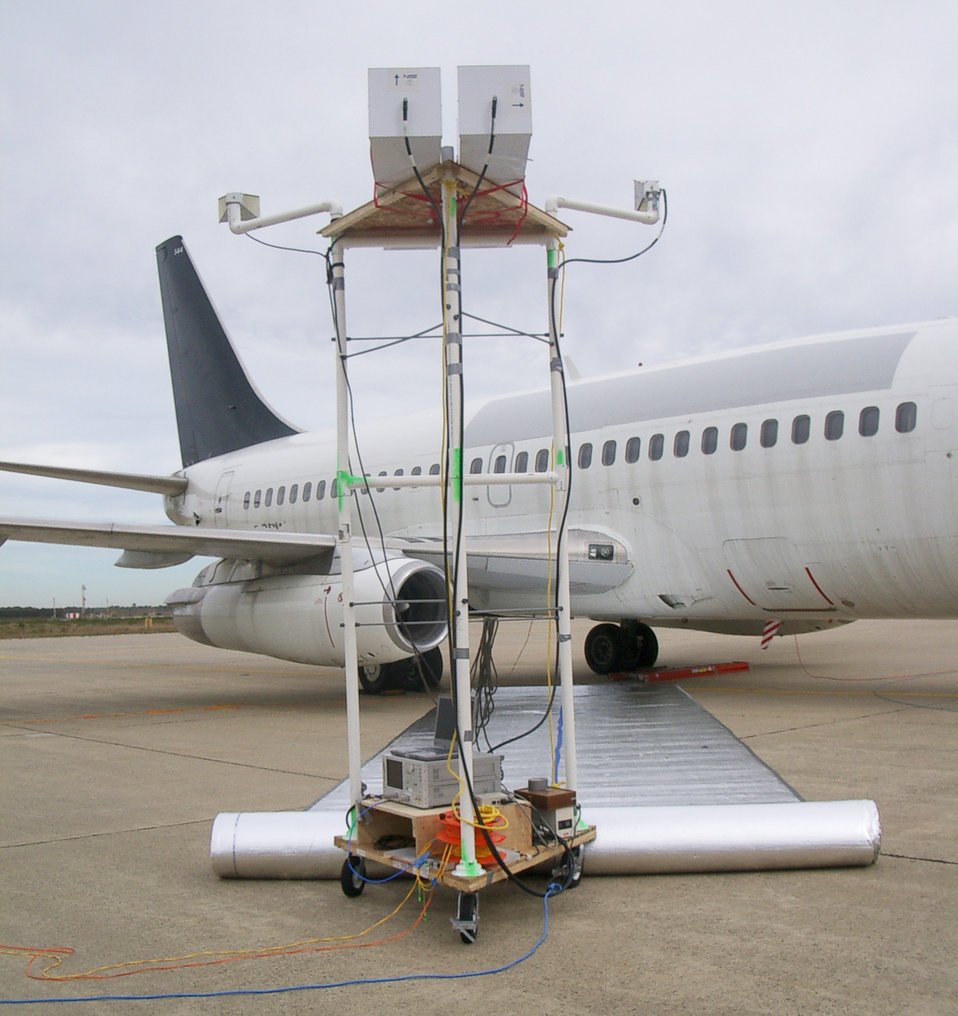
Flight instruments; Shielding

Testing equipment being used by NIST scientists in recent research mapping radio frequency penetration of airframes, in this case a Boeing 737-200. The data from the tests provided valuable independent data on how electromagnetic radiation penetrates commercial aircraft, thereby helping improve safety.